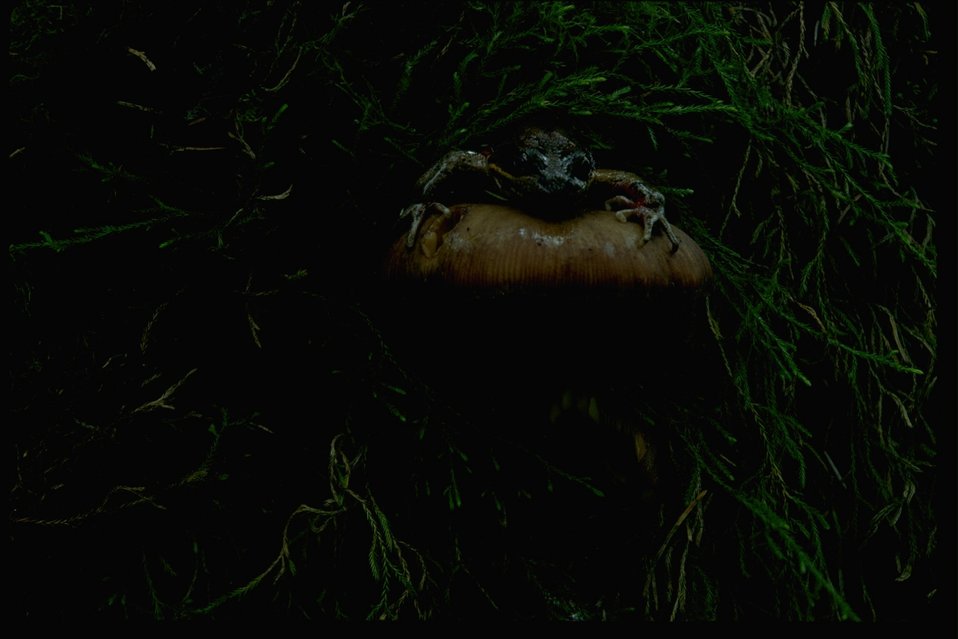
Frog on toadstool at Spruce Reach Island.